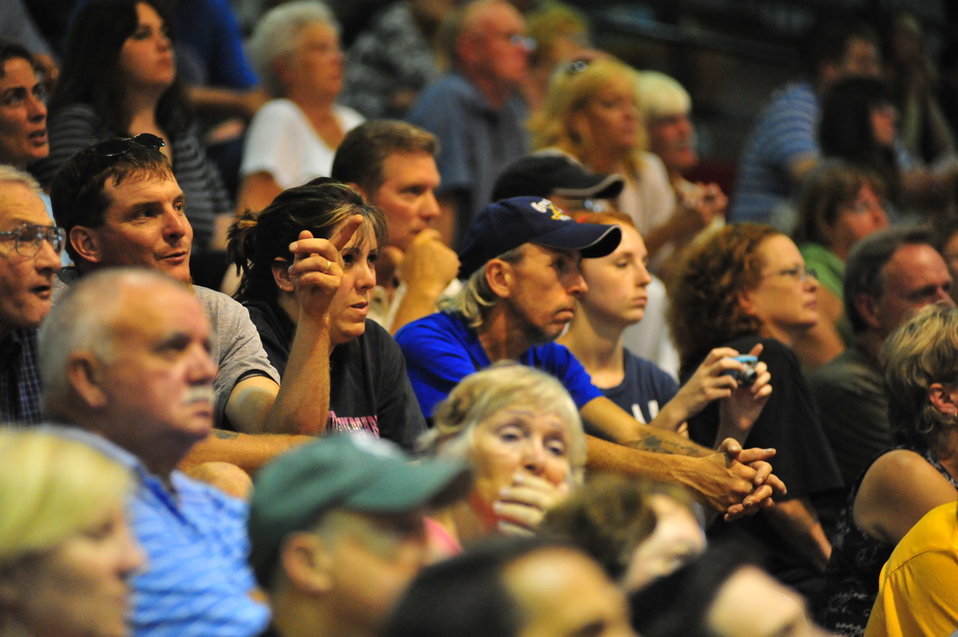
EPA's response to the Enbridge oil spill

August 3, 2010 -- More than 700 concerned community members filled the high school gymnasium in Marshall, Mich., to learn more about the government response to the Enbridge oil spill.